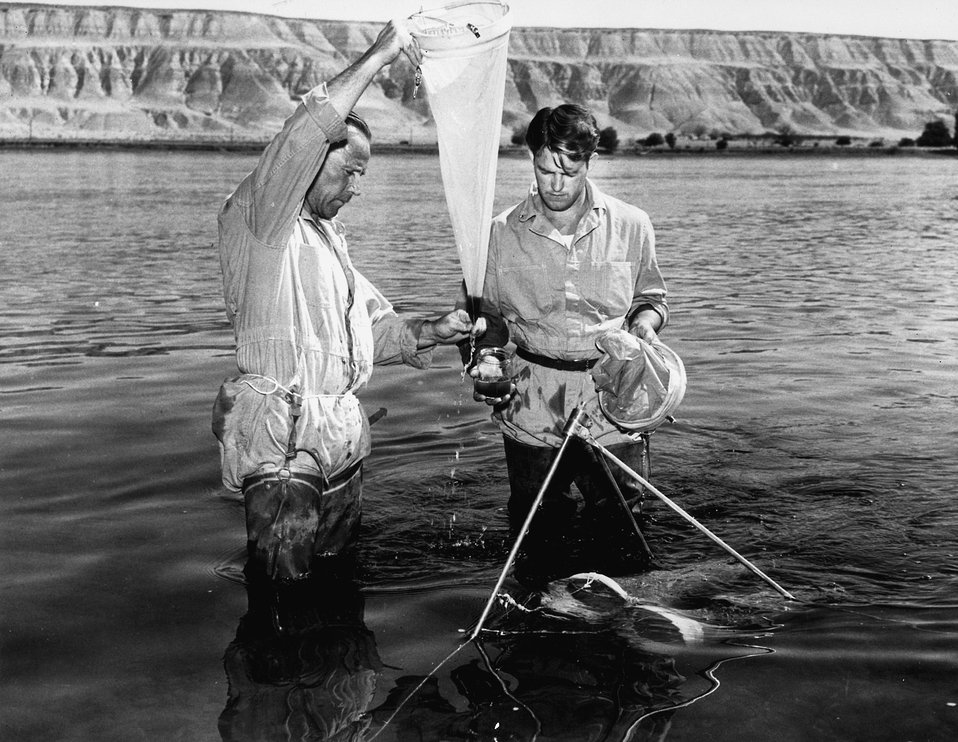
One of the operations connected with aquatic biology studies in the Columbia River. c. 1960